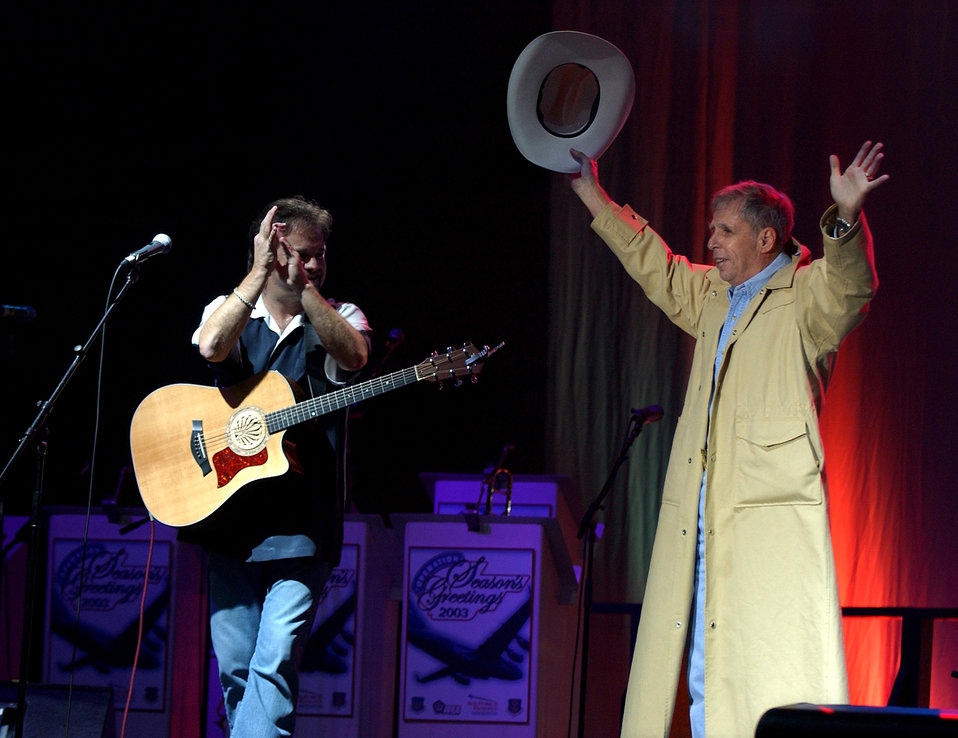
A crowd pleaser

RAMSTEIN AIR BASE, Germany -- Gen. Robert H.